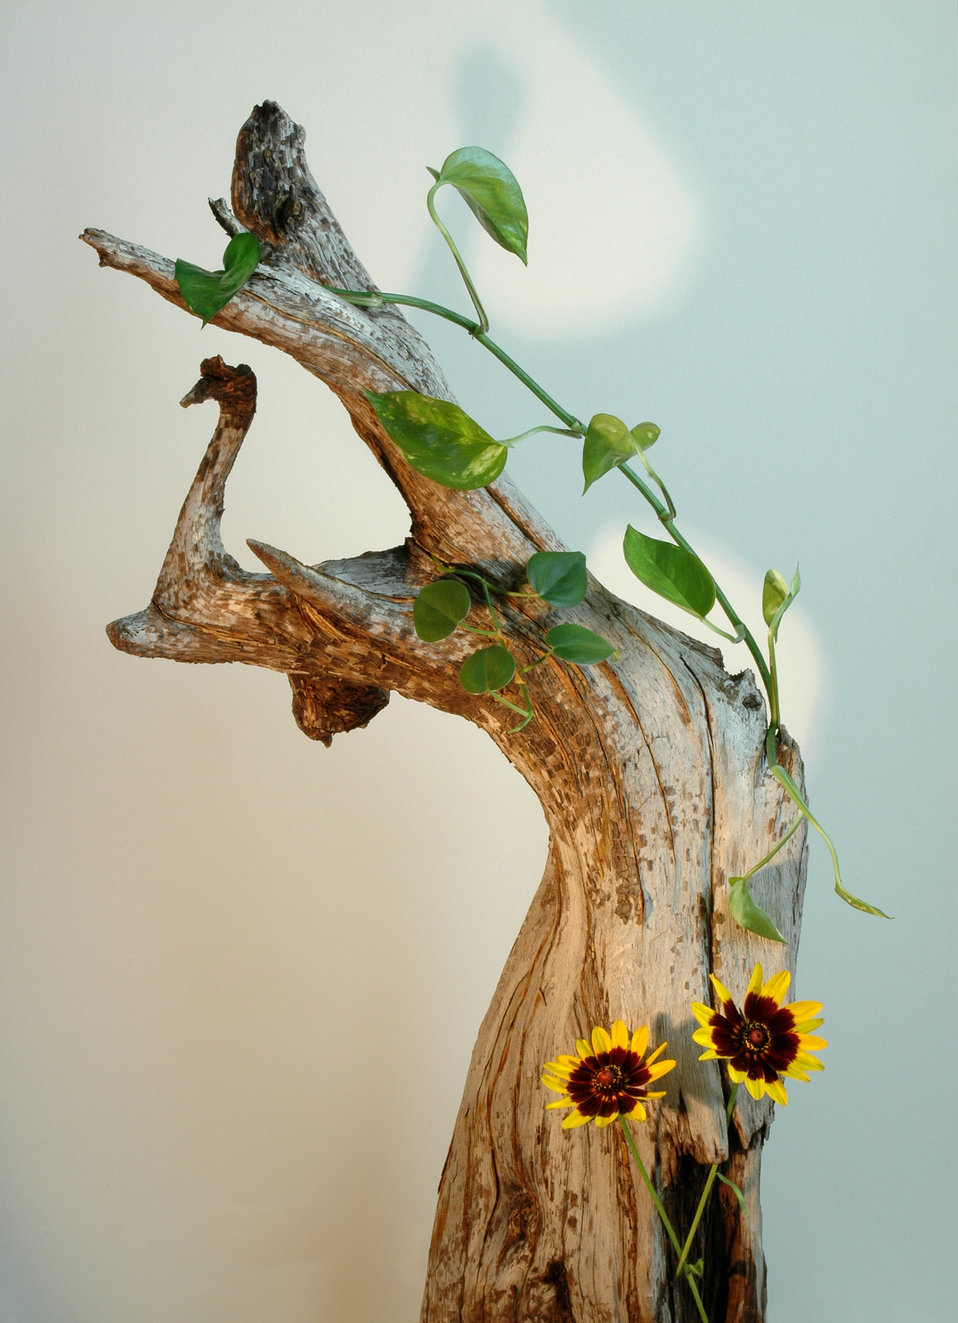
Driftwood flowers

A fancy driftwood or root stump with yellow rudbeckia flowers and a pathos vine..